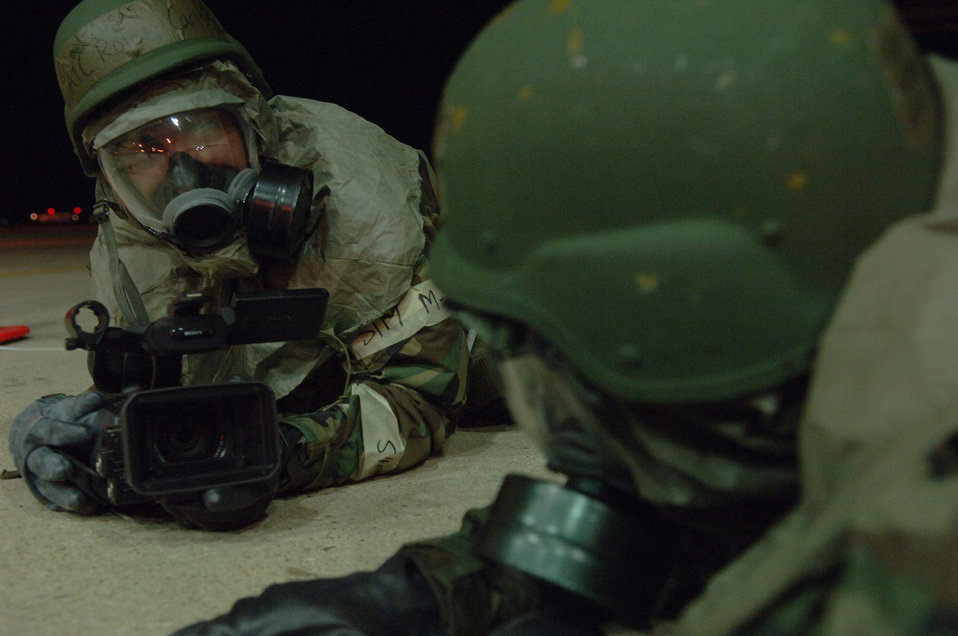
Exercise Bushwacker 06-02

Airman 1st Class Roidan Carlson interviews fellow warfighter Airman 1st Class Daniel Tucker on Monday, April 3, 2006, at Davis-Monthan Air Force Base, Ariz. The Airmen bunker down for Exercise Bushwhacker 06-02 in protective gear during a simulated deployment.